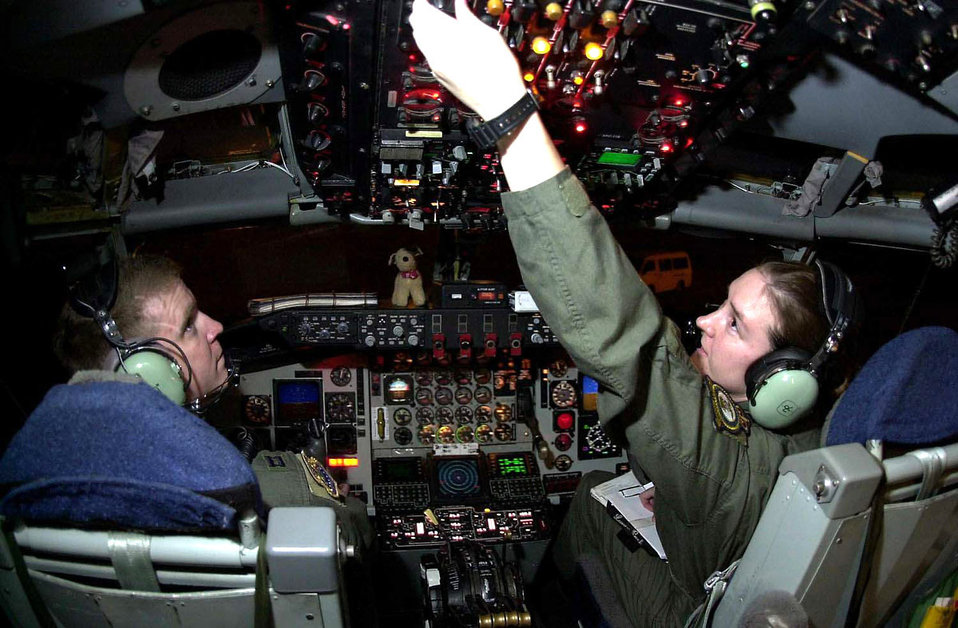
Preflight Checks

OPERATION ENDURING FREEDOM -- A co-pilot and aircraft commander finish preflight procedures for their KC-135 tanker plane. The KC-135 refueled two C-17 Globemaster III planes and several escort aircraft supporting a humanitarian relief mission associated with Operation Enduring Freedom. The C-17s airdropped 27,000 humanitarian daily rations for refugees in eastern Afghanistan.